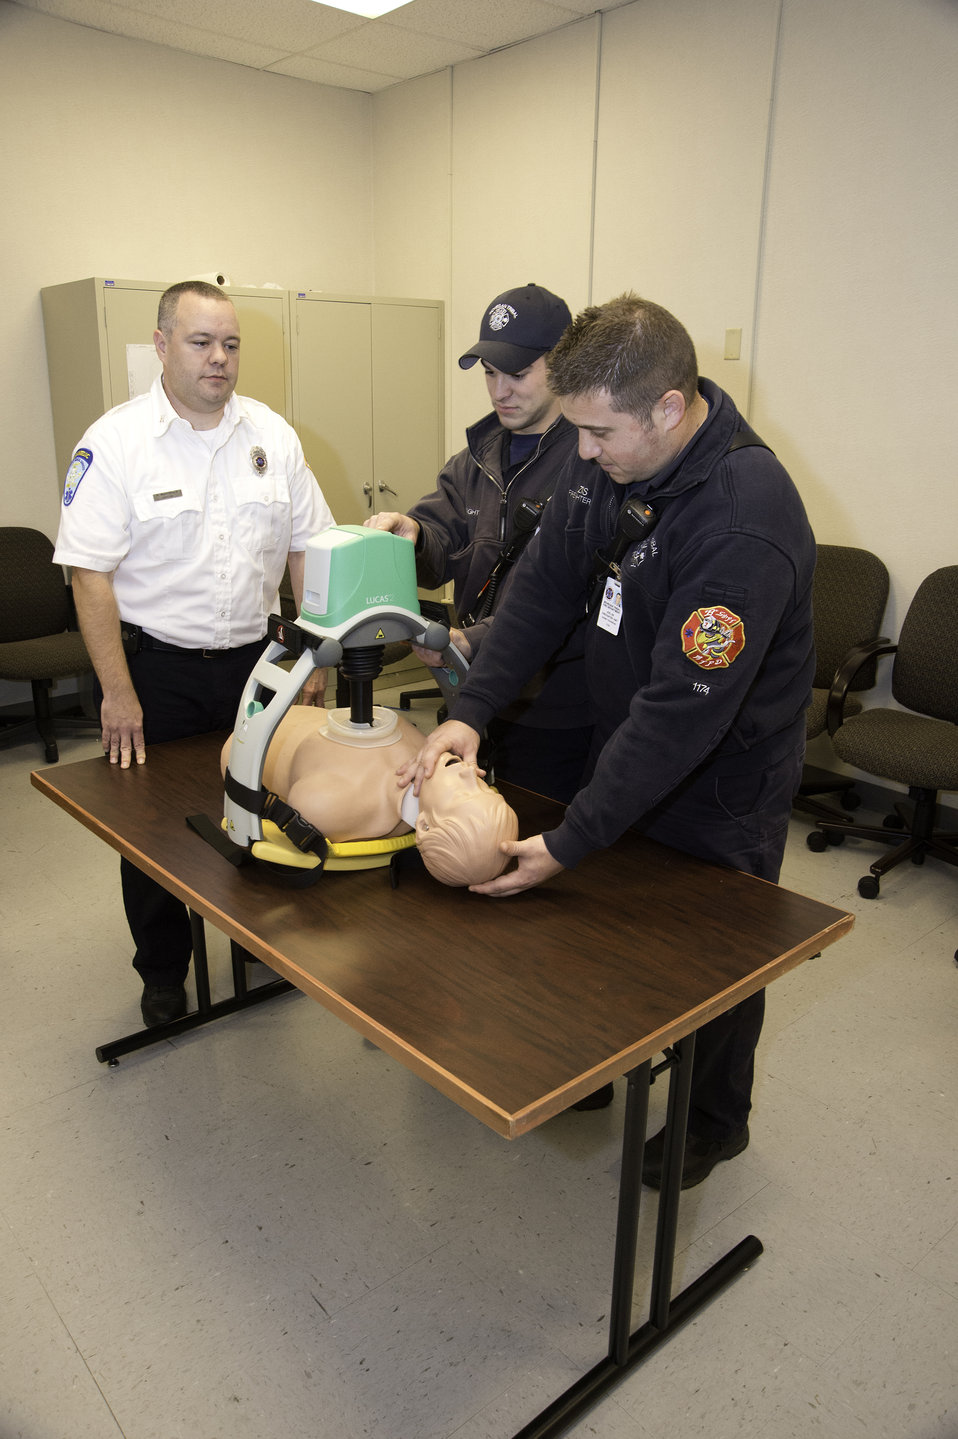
Members of the Mohegan Tribal Fire Department receive training in the life-saving “Lucas II” system for victims of cardiac arrest at the Mohegan Tribe Community Center and Government Building in Uncasville, CT on Nov. 19, 2013. A U.S. Department of Agriculture (USDA) Rural Development (RD) Community Facility Loan was provided to the Mohegan Tribe for the construction of the Mohegan Tribe Community Center and Government Building in Uncasville, CT. USDA’s RD Community Facilities Programs makes and guarantees loans to develop essential community facilities in rural areas and towns of up to 20,000 in population. Loans and guarantees are available to public entities such as municipalities, counties, parishes, boroughs, and special-purpose districts, as well as to non-profit corporations and tribal governments. The 160,000 square foot building Center hosts an exhibit celebrating federal recognition, history of Mohegan Chiefs, a new Library and Archives space, new Arts and Crafts room, a new gymnasium, and a new community room to enjoy food and family. The Center will continue the Tribe’s plan for growth and meeting the needs of its members.